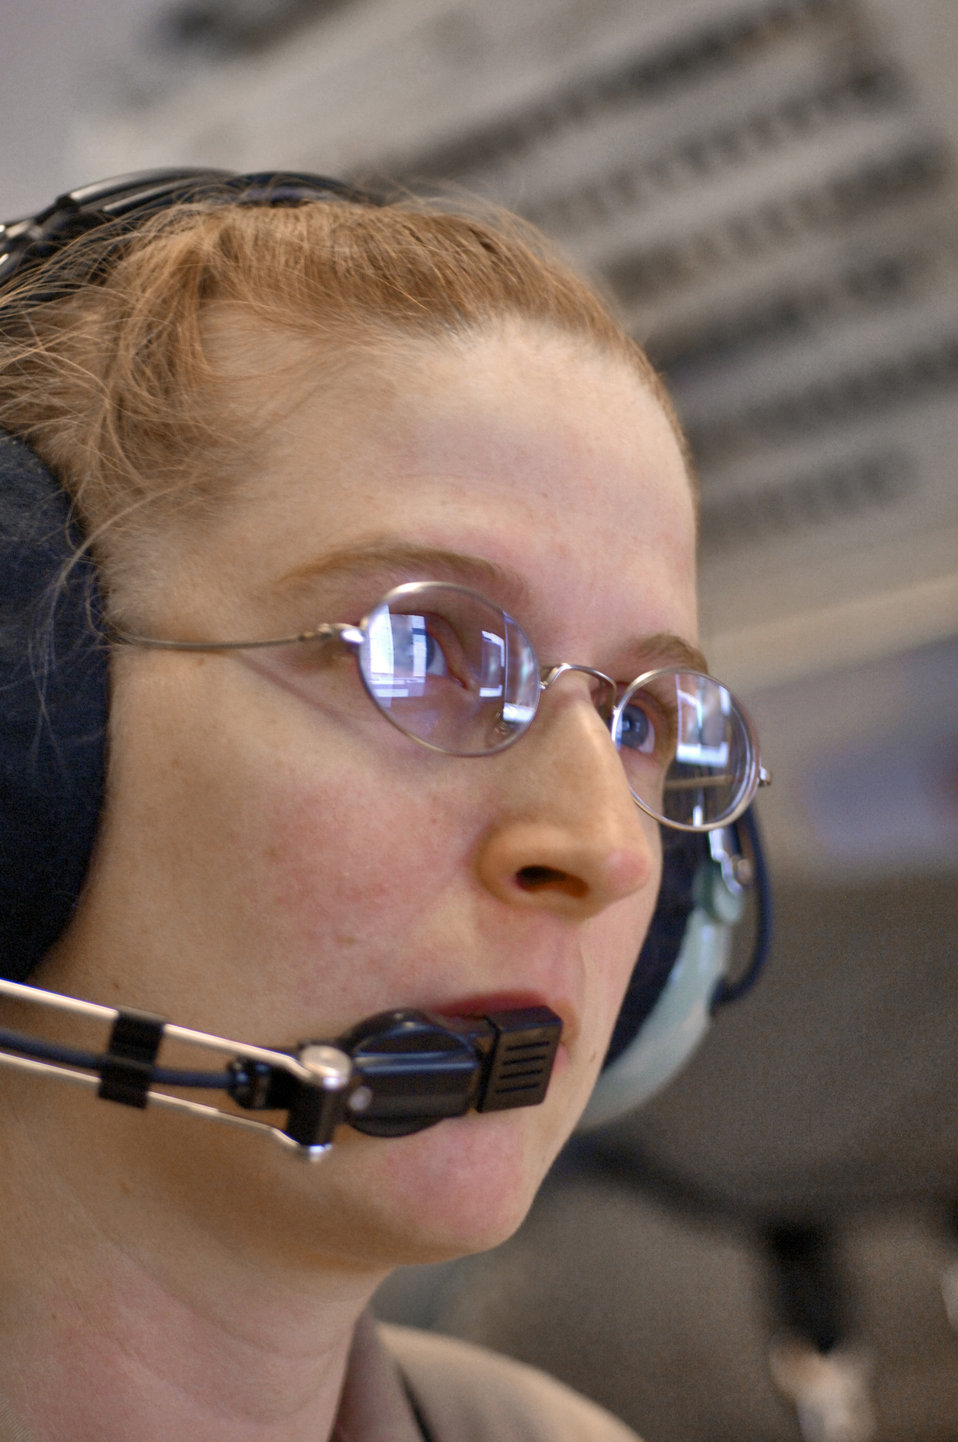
Joint STARS

SOUTHWEST ASIA (AFPN) -- 1st Lt. Melissa Bergman, an air weapons officer, directs air assets such as fighters onto targets from an E-8C Joint Surveillance and Target Attack Radar System aircraft. Joint STARS provides command and control, intelligence, surveillance and reconnaissance. Currently deployed to the 12th Expeditionary Airborne Command and Control Squadron, she is from the 116th Air Control Wing at Robins Air Force Base, Ga.